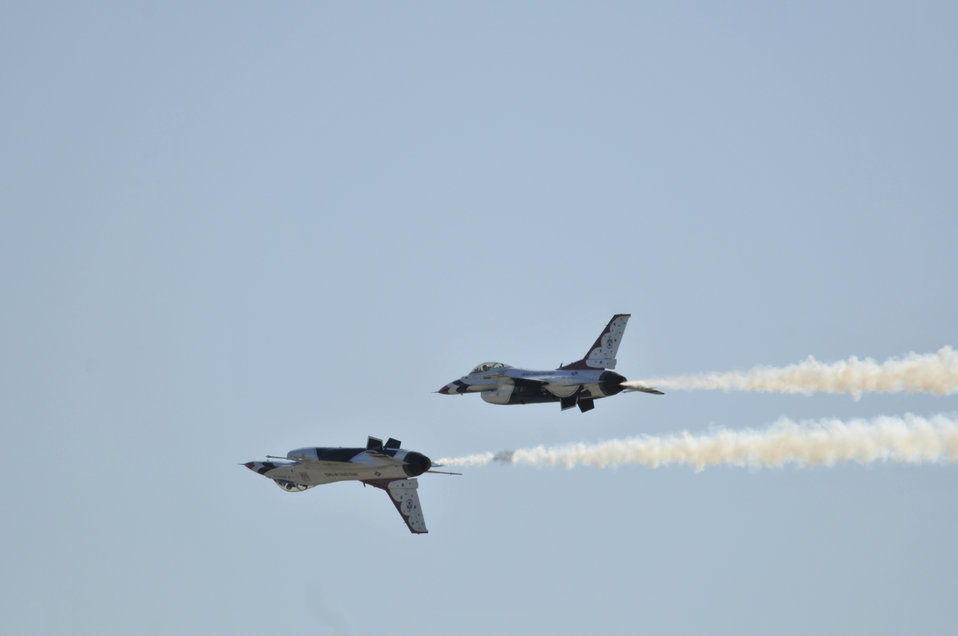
AirFest 2010

The U.S. Air Force air demonstration team, the Thunderbirds, perform precision aerial maneuvers Nov. 6, 2010, during AirFest 2010 at Lackland Air Force Base, Texas.